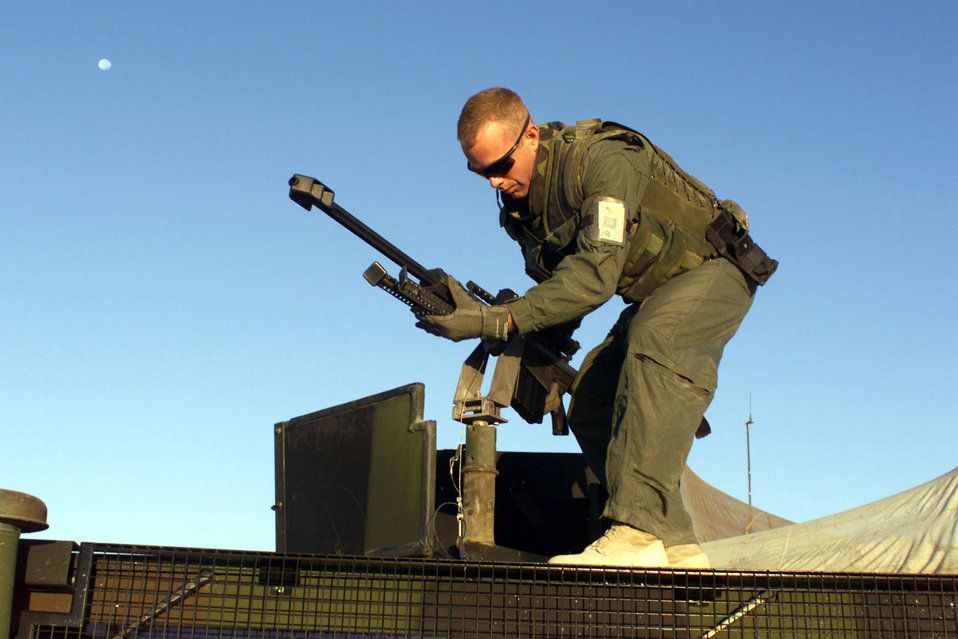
Tate

OPERATION ENDURING FREEDOM -- Senior Airman Raymond Tate from the 366th Civil Engineer Squadron unmounts the explosive ordinance disposal teams Barrett .50-caliber semi-automatic rifle from a HUMVEE after a training session, while deployed in support of Operation Enduring Freedom.